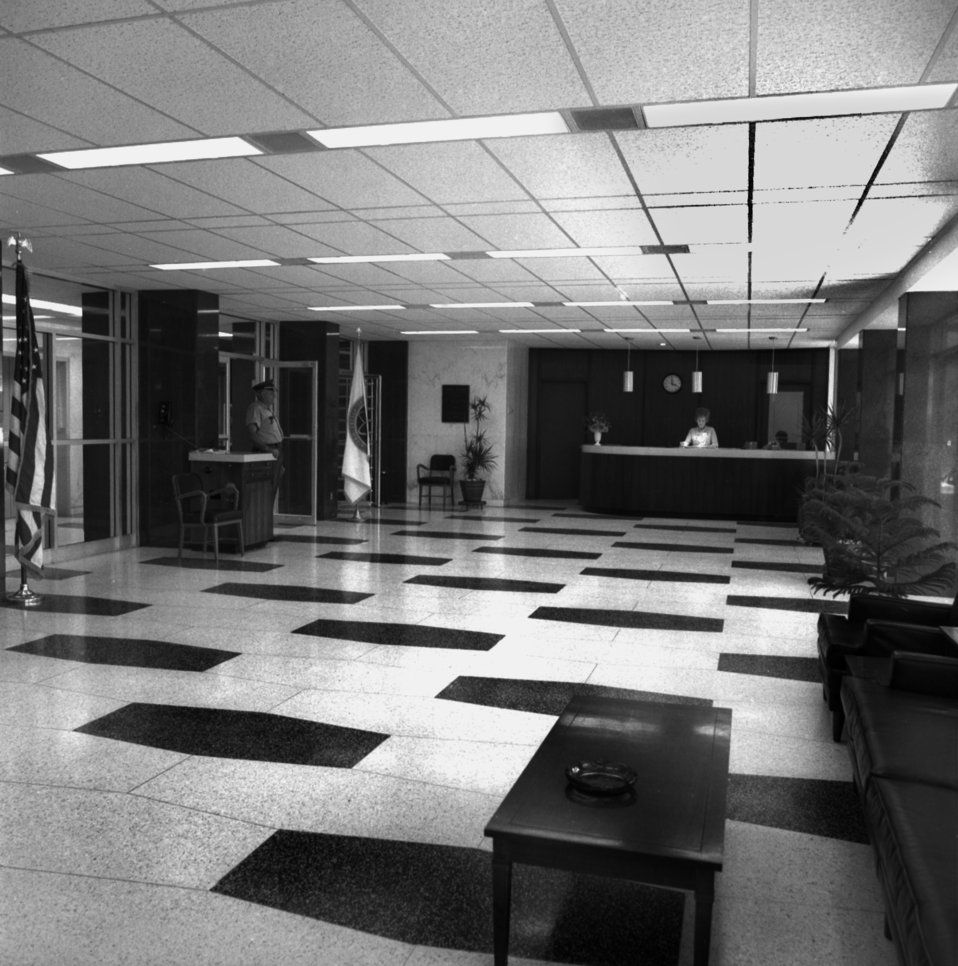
Lobby of Federal Office Bldg. in Oak Ridge

70-264b DOE photo by Frank Hoffman Oak Ridge Tennessee Sept. 1970